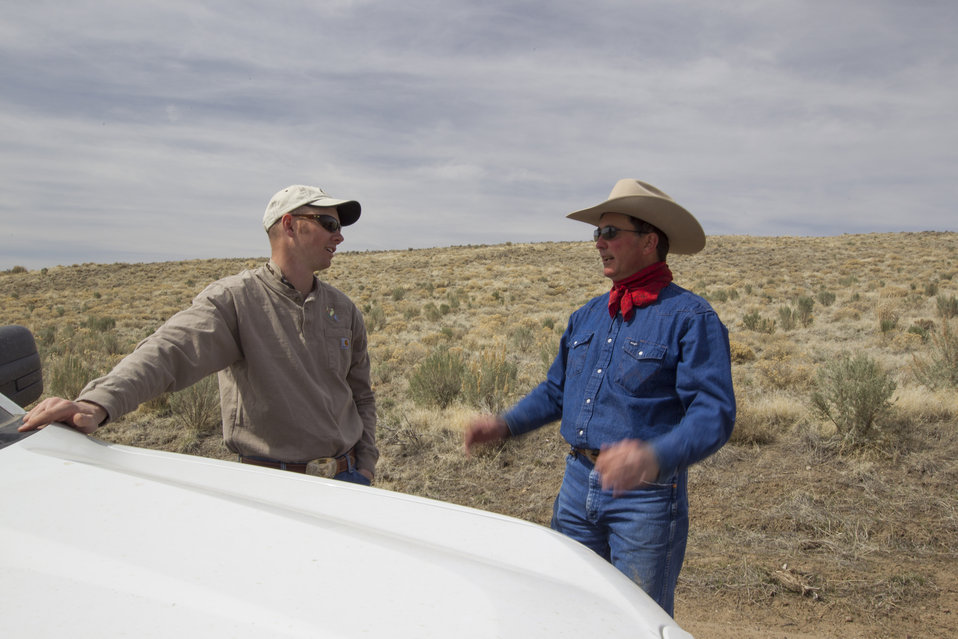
Landowner Meeting with Partners for Fish & Wildlife Program biologist